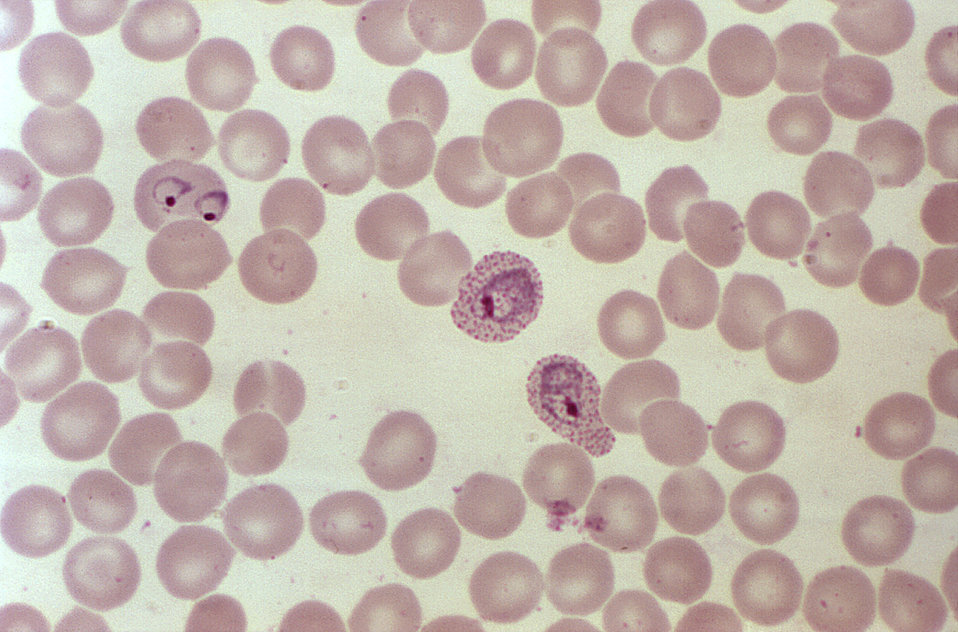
A photomicrograph of a blood smear showing erythrocytes containing developing P. vivax parasites, magnified 1000X.